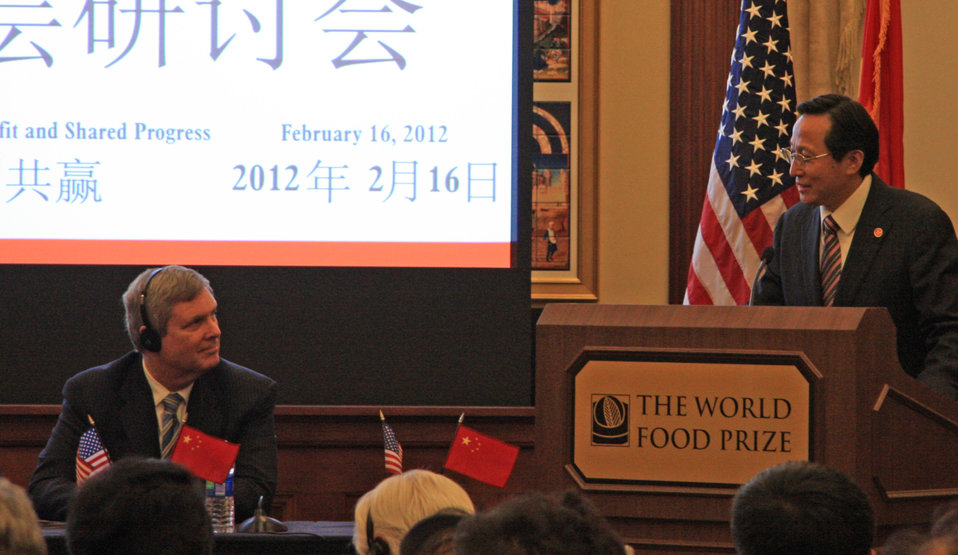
Agriculture Secretary Tom Vilsack and China's Minister of Agriculture Han Changfu today signed an historic Plan of Strategic Cooperation that will guide the two countries' agricultural relationship for the next 5 years. The plan was signed as part of the U.S.-China Agricultural Symposium held at the World Food Prize Hall of Laureates, Des Moines, IA, on Thursday, February 16, 2012. The symposium focused on bilateral cooperation in the areas of food safety, food security and sustainable agriculture, as well as enhanced business relationships between the two countries.